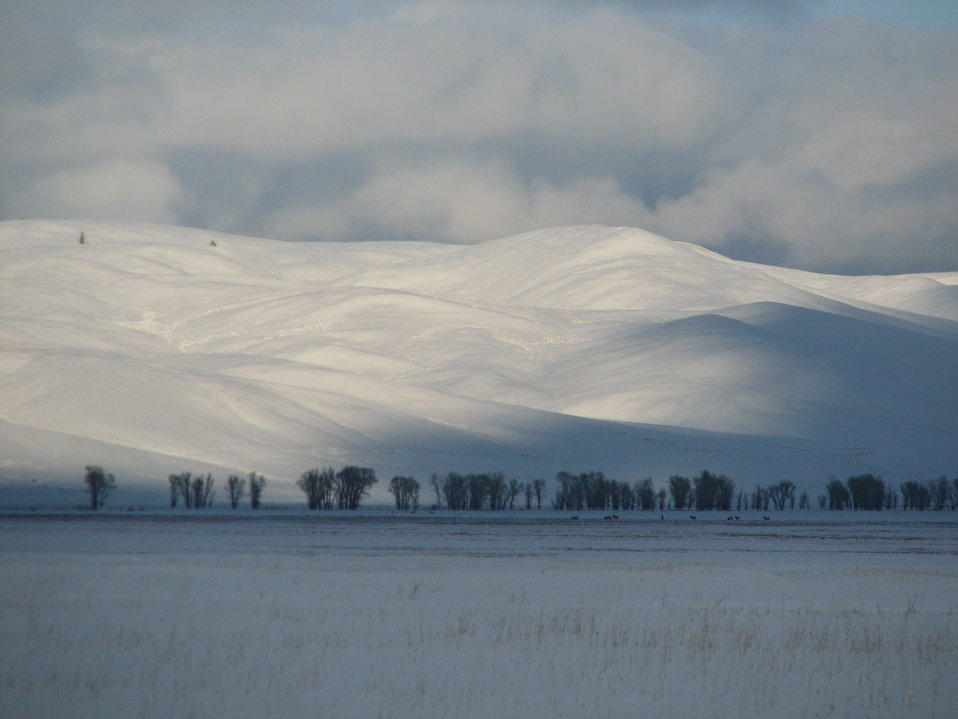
102 0234

A line of cottonwood trees along Flat Creek marks the transition from grass and sagebrush flats to the hilly region of the Refuge's northern end.